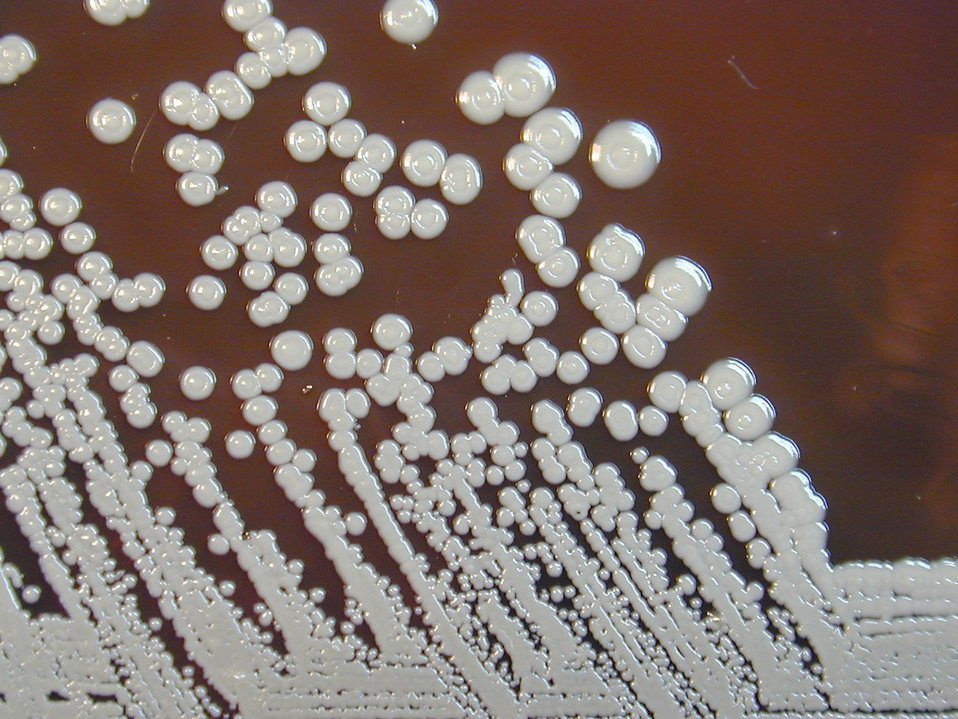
Burkholderia pseudomallei grown on sheep blood agar for 96 hours.